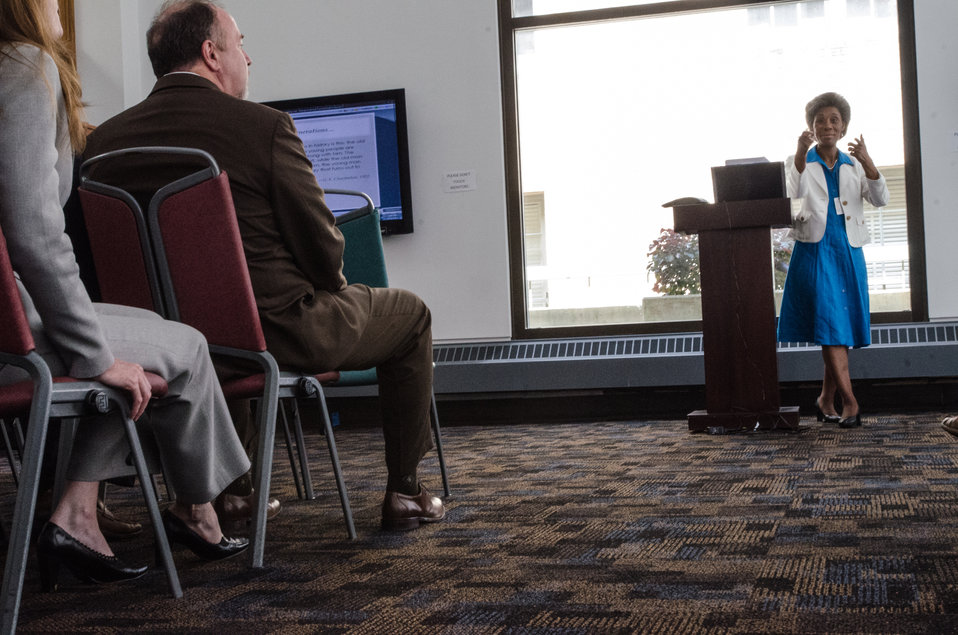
Sage Horizons Consulting Owner Cynthia Gibbs speaks at the U.S. Department of Agriculture’s (USDA) Rural Development (RD) 2nd Annual Cultural Transformation kickoff opening ceremony and forums, themed “Employees Influencing Change,” on Tuesday, Aug. 13, 2013, USDA in Washington, D.C.